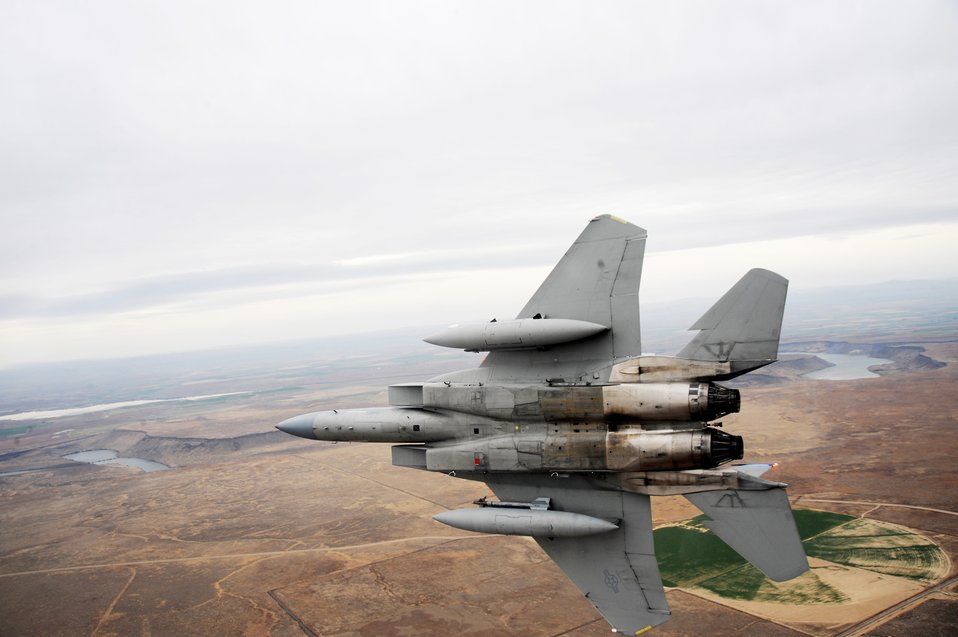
Flying over the Sawtooth Mountains

An F-15C Eagle from the 366th Fighter Wing at Mountain Home Air Force Base, Idaho, pitches out for landing Oct. 13, 2009.